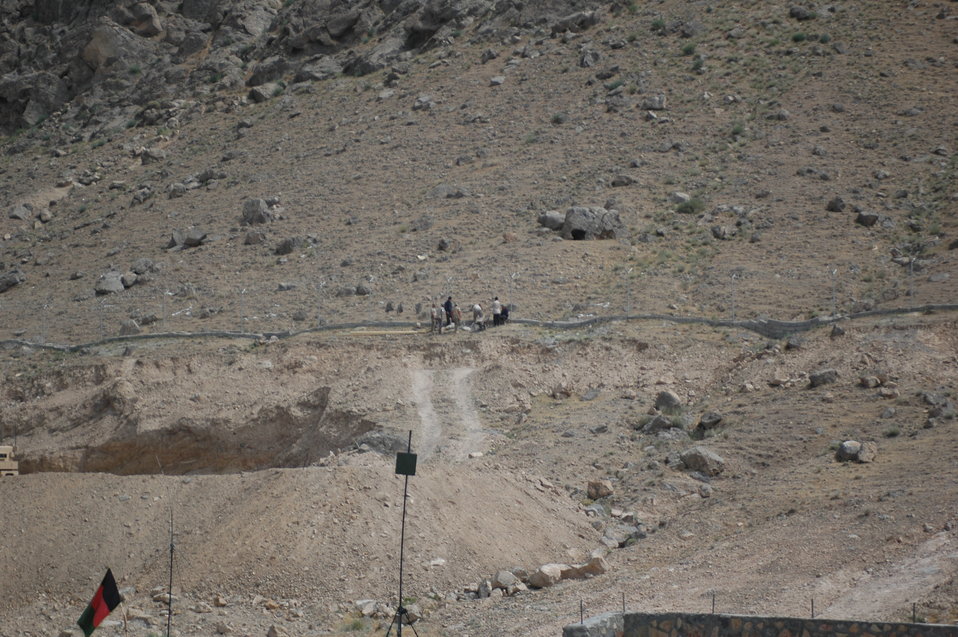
Dr Shah Visits Kandahar April 9, 2010